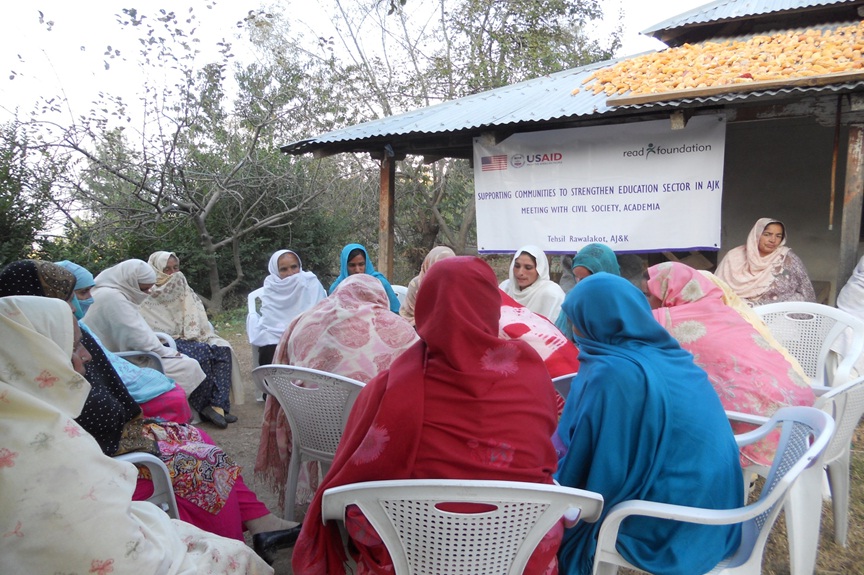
Caption 18 - READ Foundation - AJK RWLKT - Meeting Community for Education

READ Foundation, working on education sector reforms under USAID’s Citizens’ Voice Project, is hosting a community meeting with women in Azad Jammu & Kashmir to create awareness about the right to education.